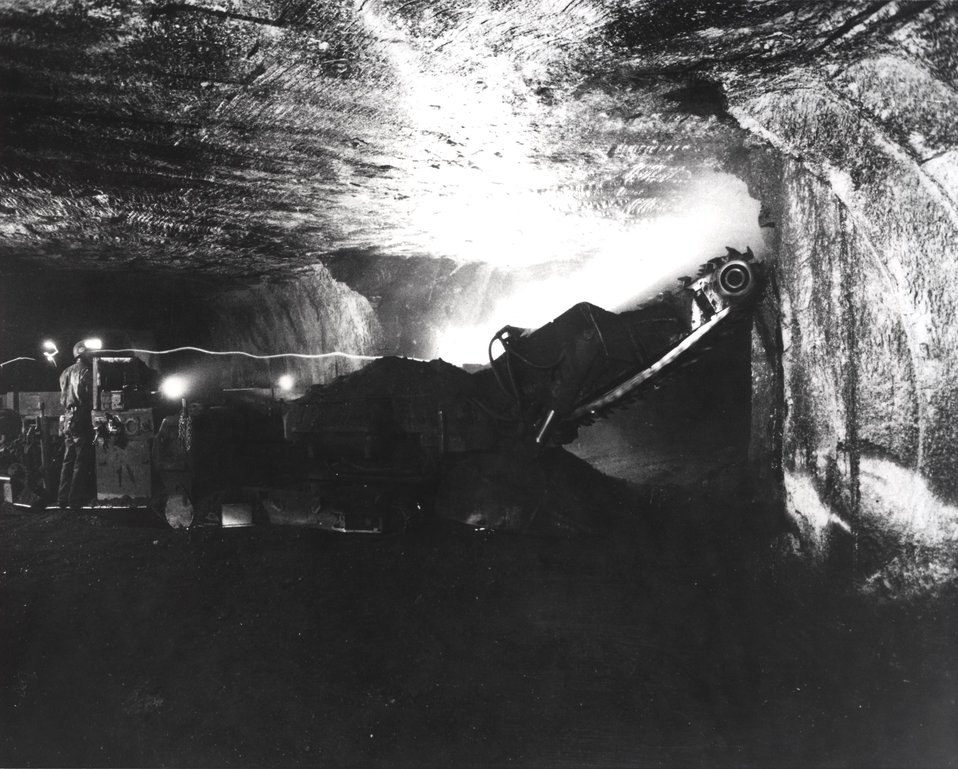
Modern continuous mining machine tears coal from the face of the seam with steel teeth on rotating cutter head. c. 1972